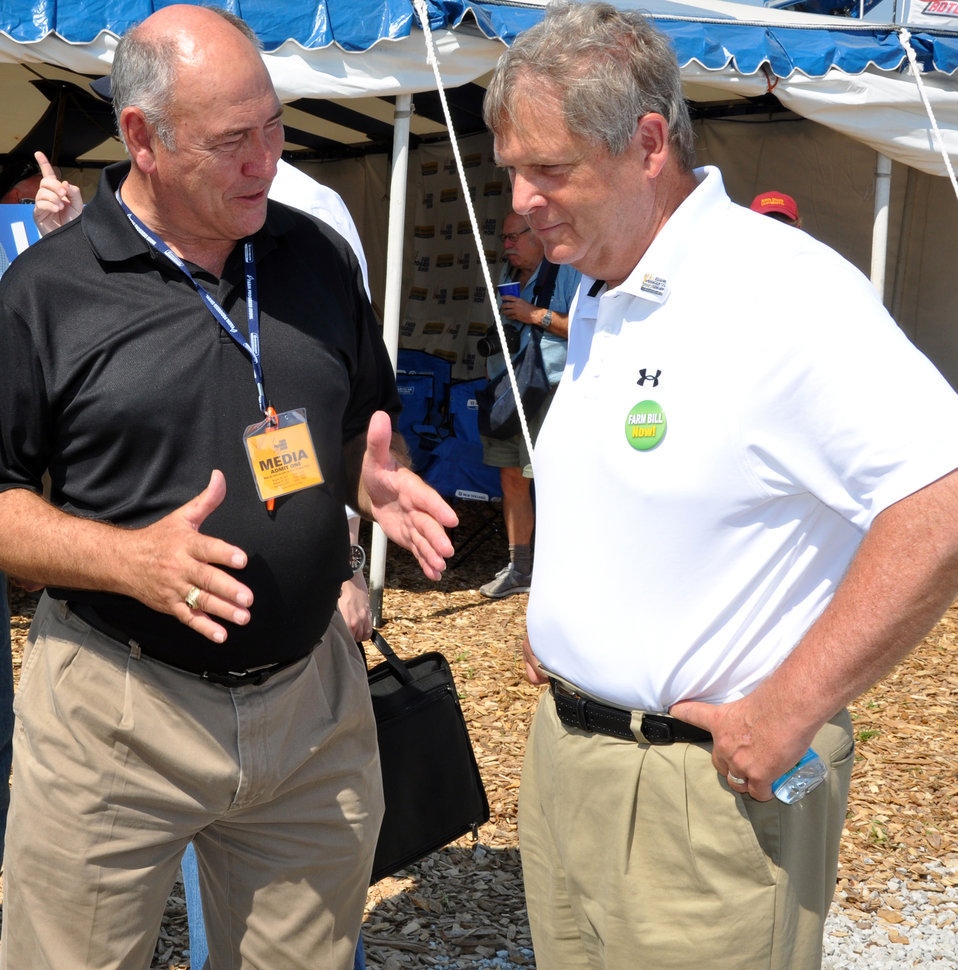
Agriculture Secretary Tom Vilsack visits with veteran Iowa farm broadcaster Ken Root during the 2012 Farm Progress Show in Boone, Iowa, on Aug. 30 2012.